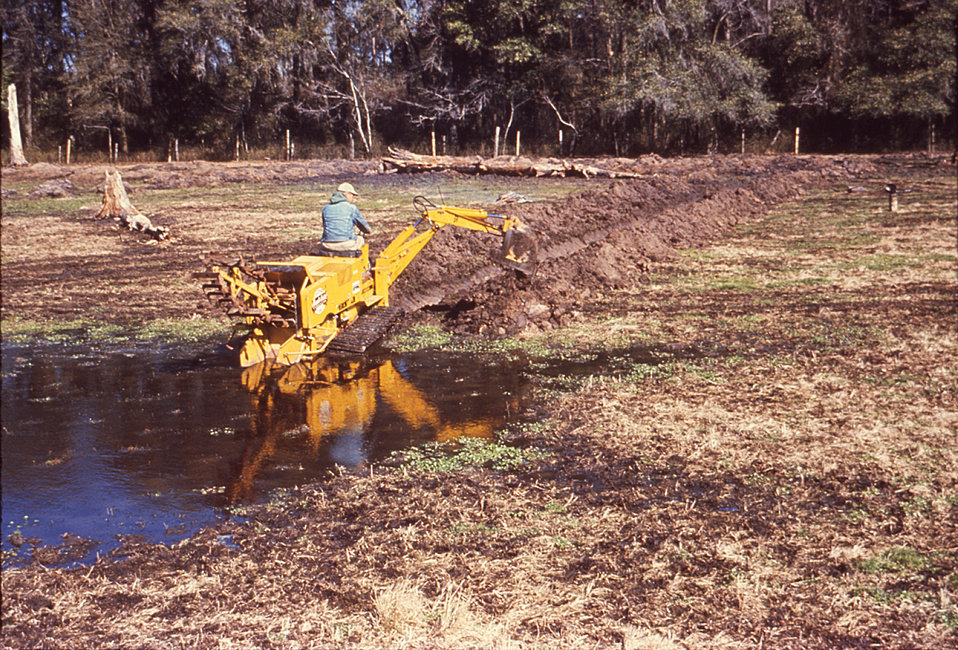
Using a gasoline-powered back hoe outfitted with a triangular bucket especially designed for pasture-type digging, this machine operator was excavating a ditch, which would drain this pool of standing water in a Chatham County, Georgia field that happens to be the habitat of a population of Psorophora columbiae mosquitoes.